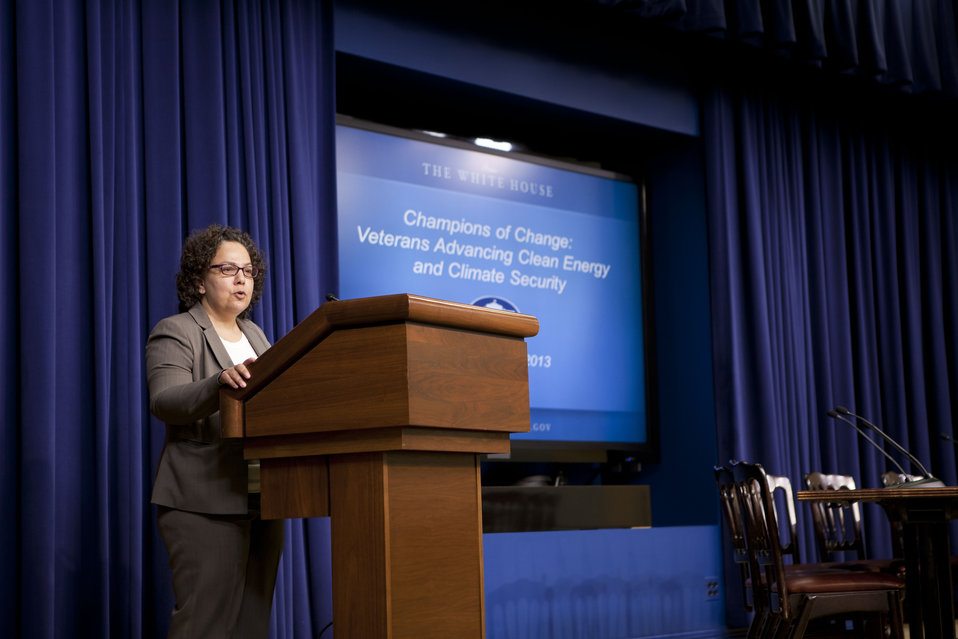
Nancy Sutley, Chair of the White House Council on Environmental Quality (CEQ), kicks-off Champions of Change to honor veterans for advancing clean energy and climate security.